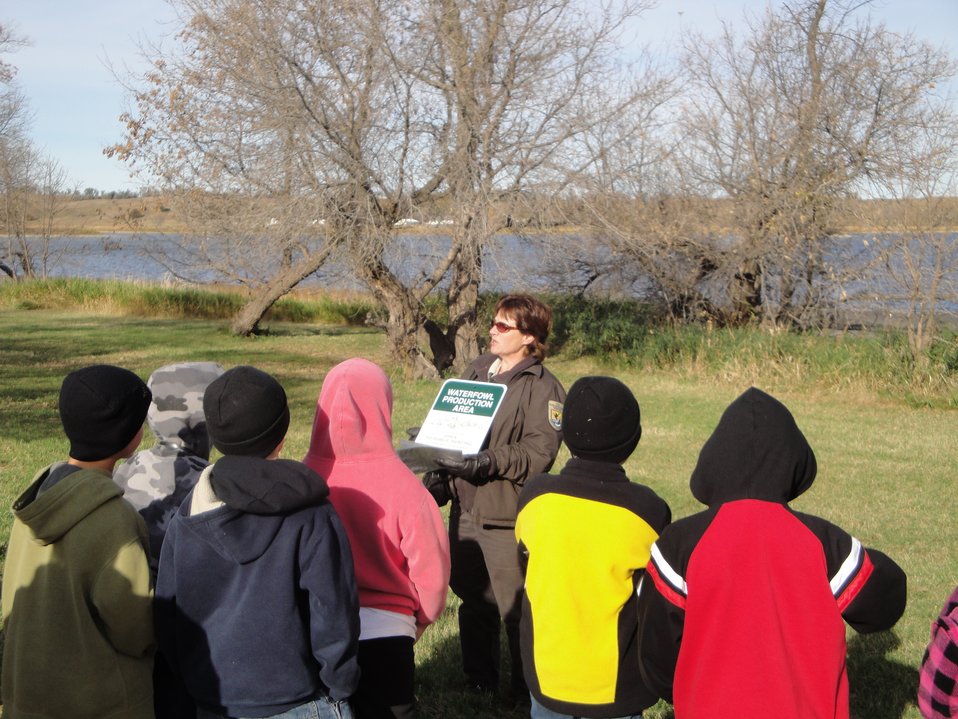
Arrowwood National Wildlife Refuge

Arrowwood NWR biologist Paulette Scherr speaks with school kids about the Refuge's Waterfowl Production Area during National Wildlife Refuge Week.